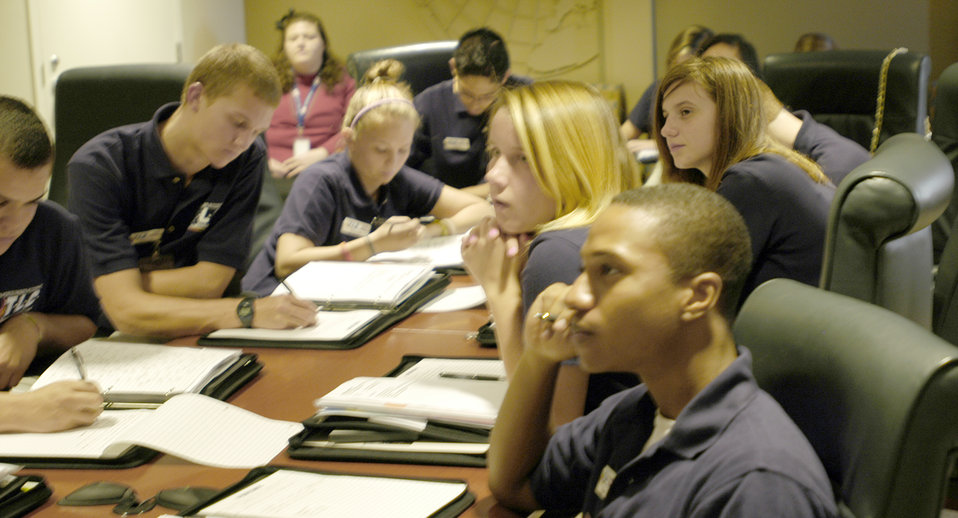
AFR Teen Leadership Council

Teenagers from around the nation gathered at Headquarters Air Force Reserve Command for the first AFR Teen Leadership Council meeting Nov. 12, 2010, at Robins Air Force Base, Ga. The teens, who were selected to represent their peers as members of the council, received briefings on Air Force Reserve Yellow Ribbon Reintegration Programs and spoke to Lt. Gen. Charles Stenner Jr., the AFRC commander, about issues facing children of Air Force reservists.